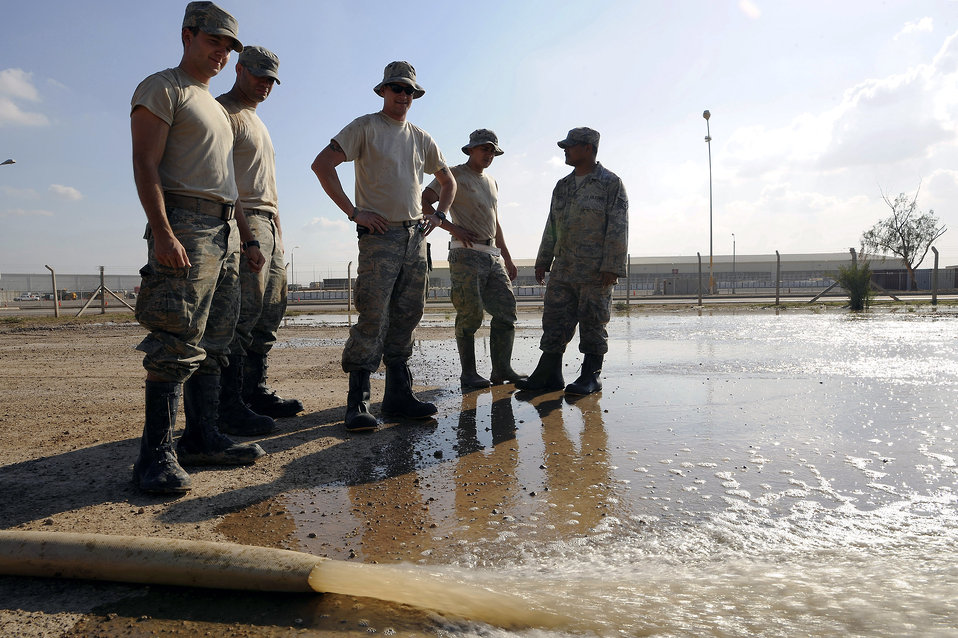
Did someone call a plumber?

Airman 1st Class Gregory Hayes, Senior Airman Paul Clayborn, Tech. Sgt. Eric Miner, Senior Airman Christian Crespo and Staff Sgt. Mervie Dotson watch as floodwater from one yard flows into an used yard Nov. 3 at Joint Base Balad, Iraq. Pumping the floodwater allows maintenance technicians to access a radio tower on base. All five Airmen are utilities systems technicians with the 332nd Expeditionary Civil Engineer Squadron. Airman Clayborn, a native of Arlington, Texas, is deployed from Andrews Air Force Base, Md. Sergeant Dotson, a native of Tyler, Texas, is deployed from Barksdale AFB, La. Sergeant Miner, a native of Concord, N.H., is deployed from McConnell AFB, Kan. Airman Crespo, a Dallas native, is deployed from Malmstrom AFB, Mont. Airman Hayes, a native of Lancaster, S.C., is deployed from Schriever AFB, Colo.